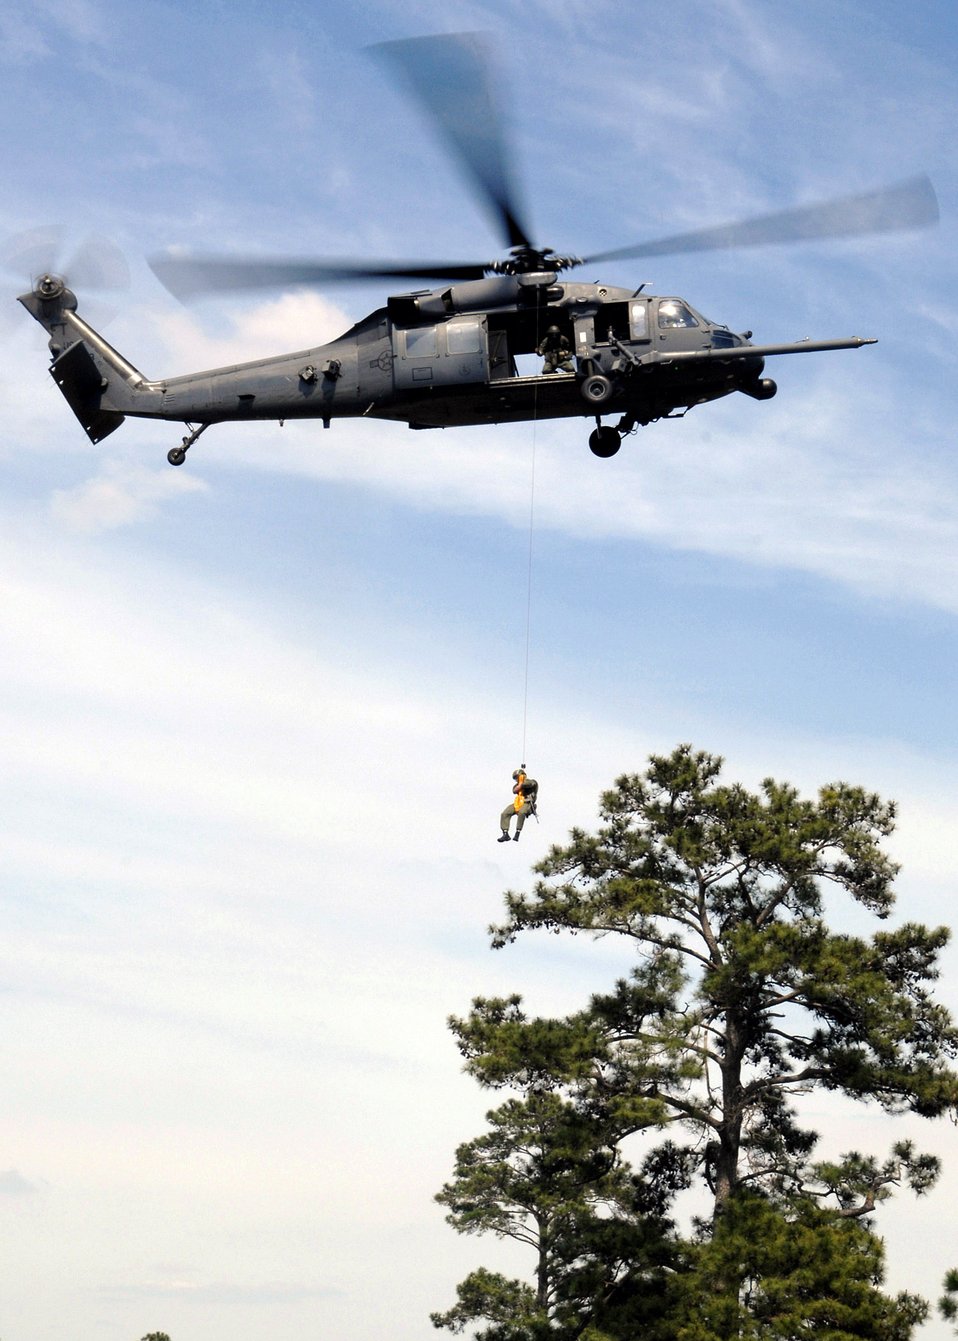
Pitsenbarger re-honored at Moody after 42 years

An Airman from the 38th Rescue Squadron rappels from an HH-60G Pave Hawk dressed in a Vietnam-era style uniform during a Medal of Honor ceremony for Airman 1st Class William H. Pitsenbarger at Moody Air Force Base, Ga., April 18. Airman Pitsenbarger was a pararescueman who died in battle on April 11, 1966, and was posthumously awarded the Air Force Cross and later the Medal of Honor.